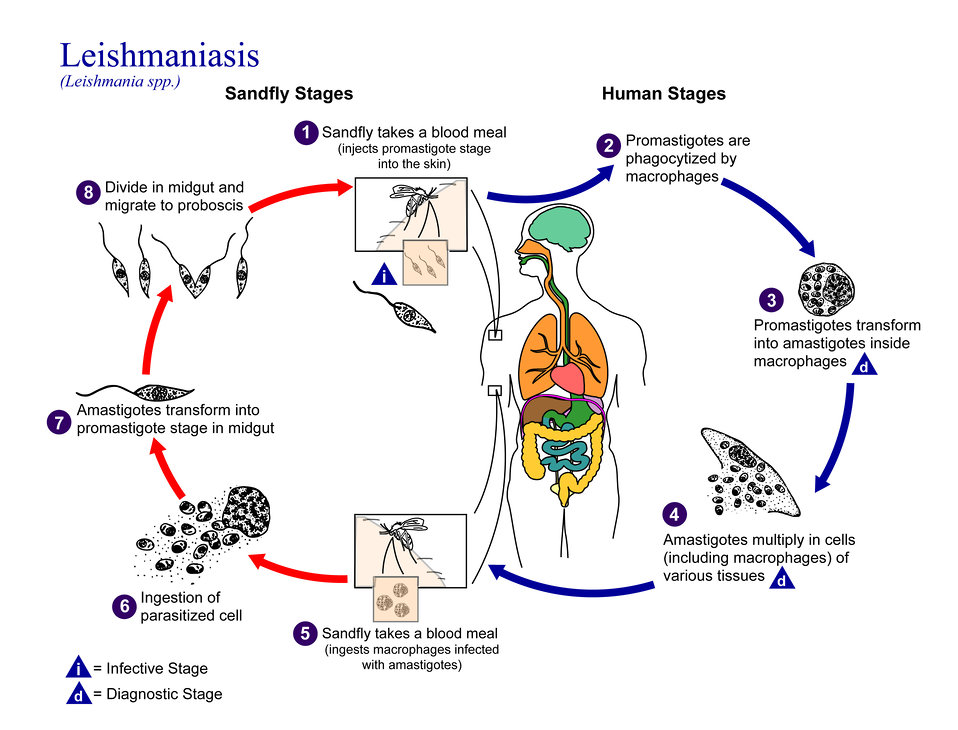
This is an illustration of the life cycle of Leishmania spp., the causal agents of Leishmaniasis.